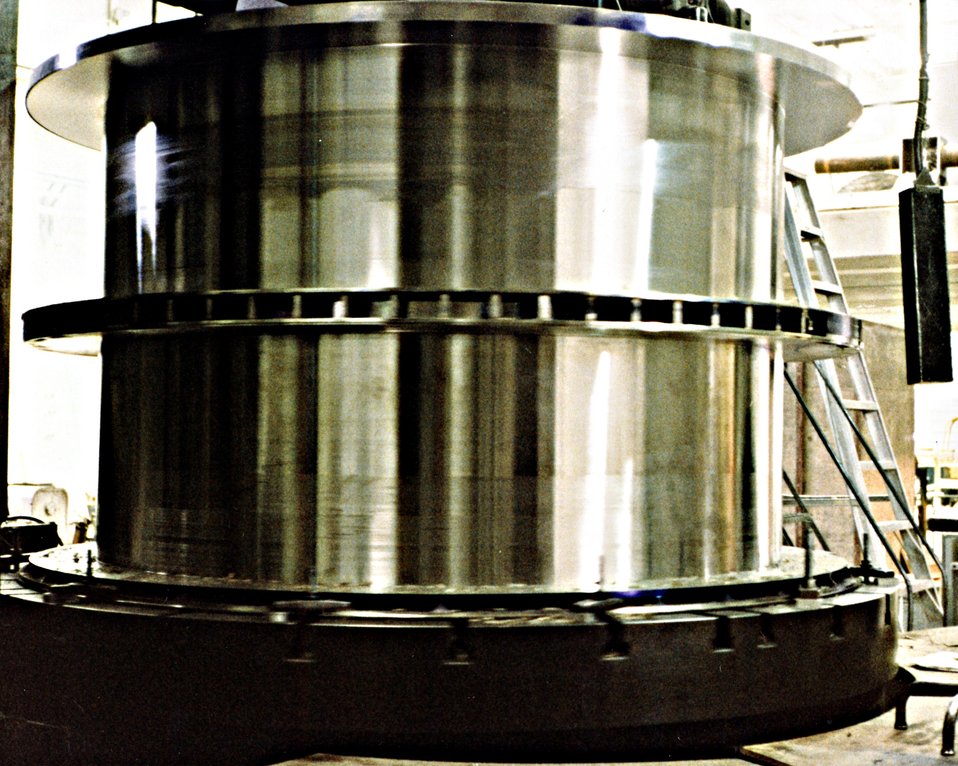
SUPERCONDUCTING WIRE WILL BE WOUND AROUND THE UPPER AND LOWER SECTIONS OF THIS K800 BOBBIN.

THE NATIONAL SUPERCONDUCTING CYCLOTRON LABORATORY IS BEING CONSTRUCTED FOR DOE AT MICHIGAN STATE UNIVERSITY. THE FACILITY IS BASED ON A NEW KIND OF PARTICLE ACCELERATION, THE SUPERCONDUCTING CYCLOTRON, WHICH WILL BE USED TO STUDY THE NUCLEAR REACTIONS BETWEEN 'HEAVY IONS'. USING ULTRA COLD, SUPERCONDUCTING TECHNOLOGY FOR THE POWER COILS HAS RESULTED IN A COMPACT CYCLOTRON WITH A UNIQUELY HIGH ENERGY GAIN. THE LABORATORY IS AN EXTENSION OF AN EXISTING FACILITY AND WILL PROVIDE A SECOND STEP SUPERCONDUCTING CYCLOTRON AND ADDITIONAL EXPERIMENTAL AREAS, BEAM TRANSPORT SYSTEMS, RADIATION SHIELDING, AND SUPPORT AREAS.